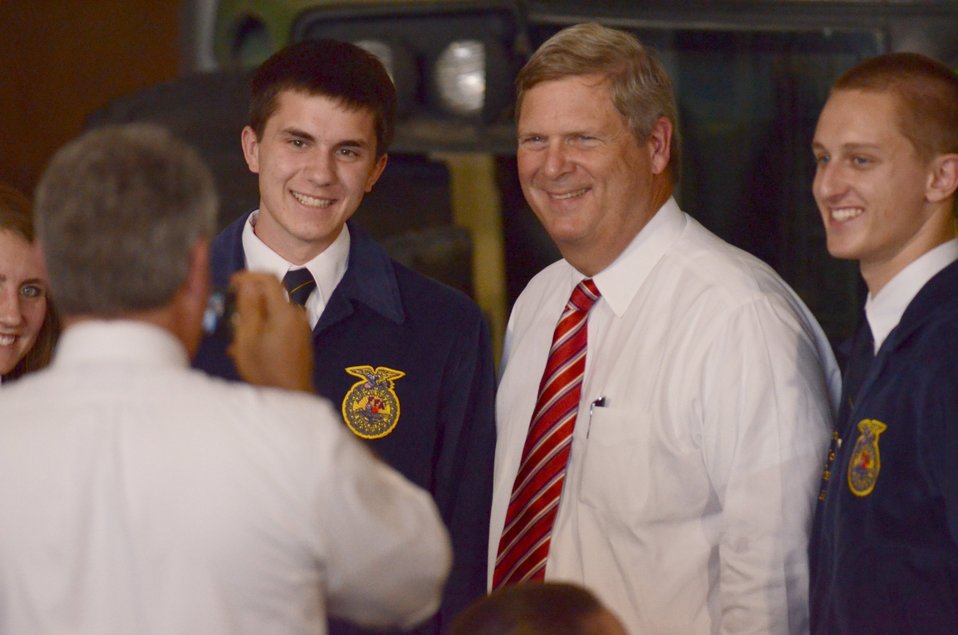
Agriculture Secretary and chair of the White House Rural Council Tom Vilsack, poses with Iowa Future Farmers of America members at the Northeast Iowa Community College, IA, prior to the White House Rural Economic Forum, on Tuesday, Aug. 16, 2011.